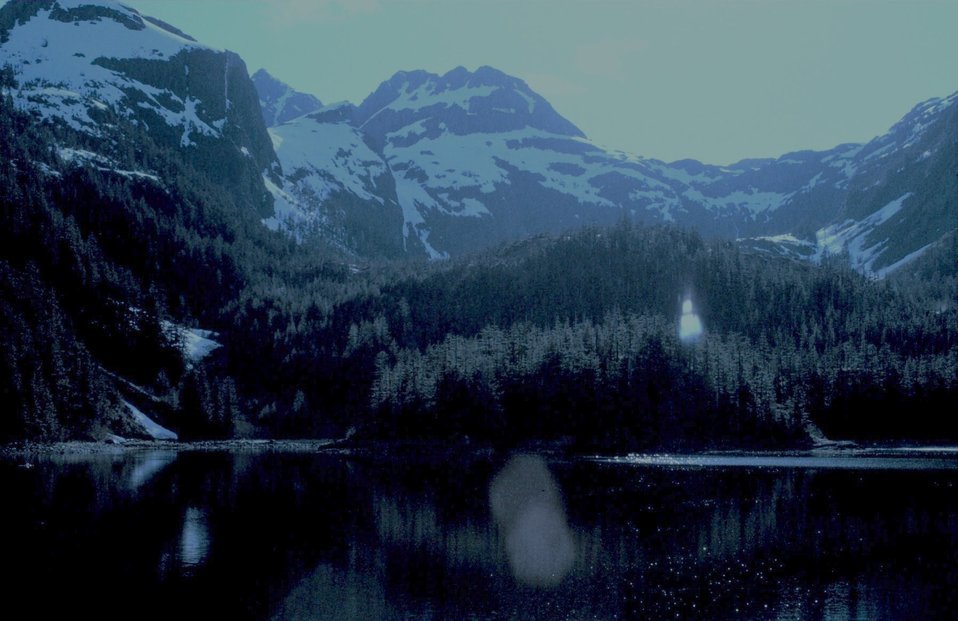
Prince William Sound